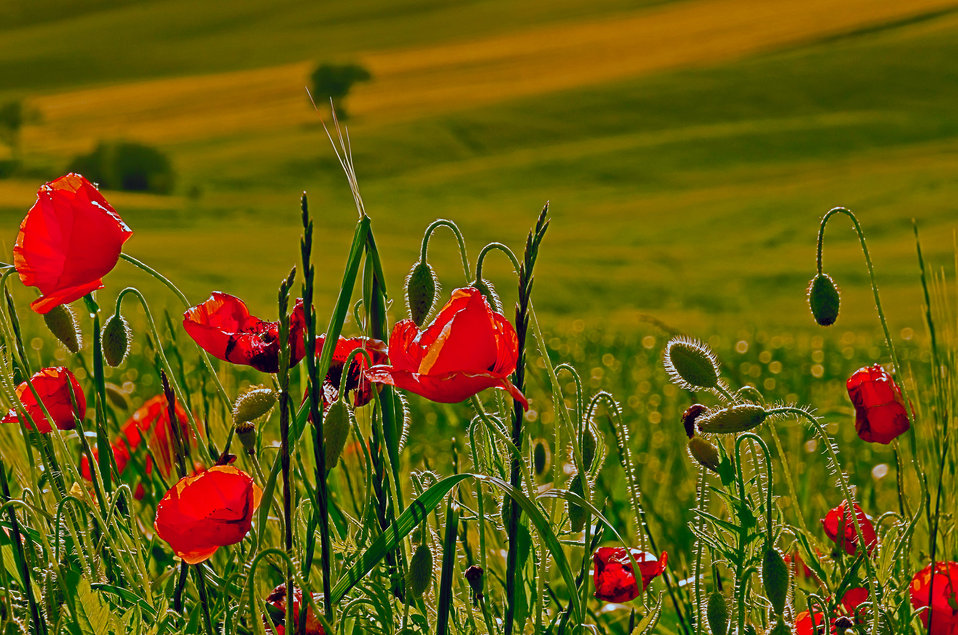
Poppies, flowers, fields.